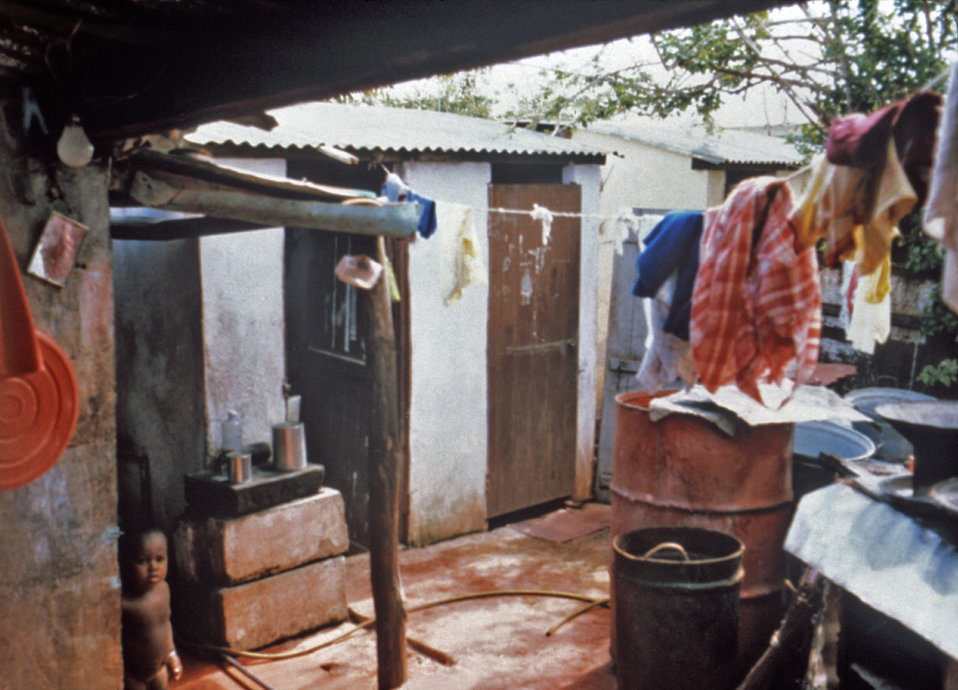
The background of this photograph shows a water closet, or bathing area, found in the residence of the index case of the 1980 Cite' Roche Bois, Mauritius typhoid outbreak.